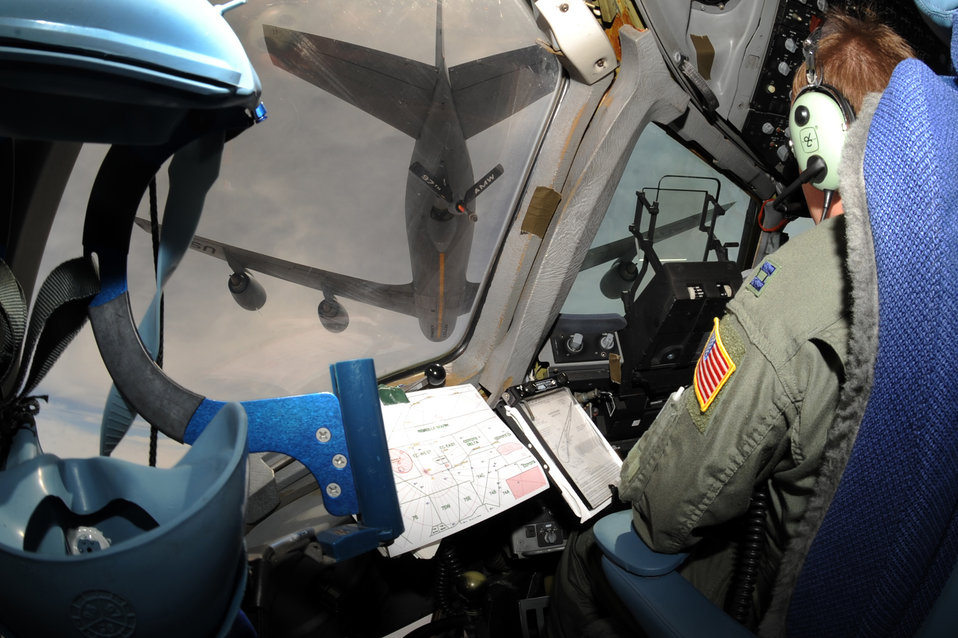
Testing mobility forces

Capt. Mike Parker, of the 62nd Operations Group at McChord Air Force Base, Wash., positions his aircraft under a KC-135 Stratotanker for refueling during the Mobility Air Forces Exercise May 20 at Nellis AFB, Nev.